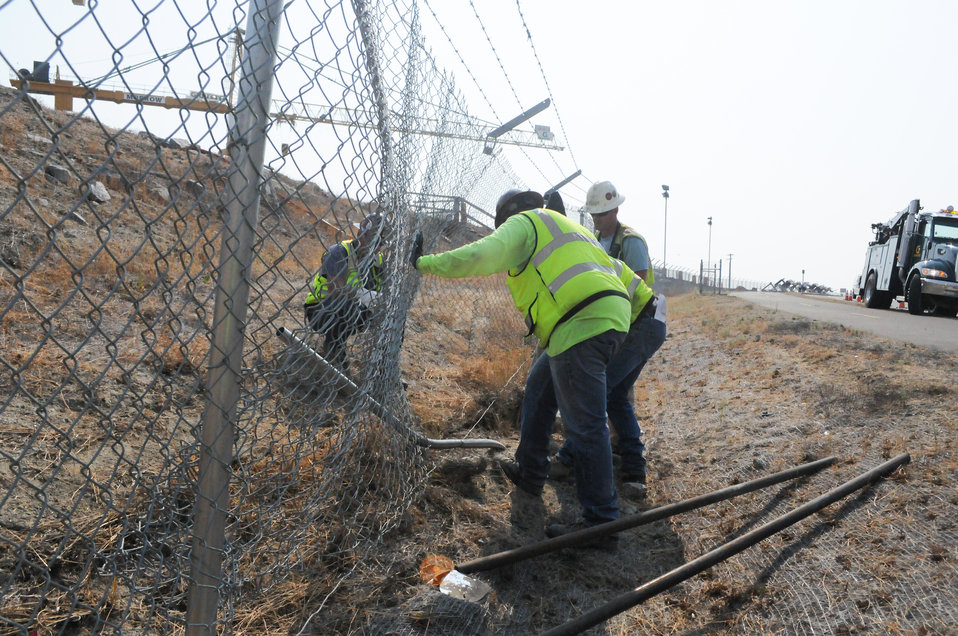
Repairing security fence at construction site

Granite Construction Inc. employees repair a security fence a vehicle crashed through before plunging into the Folsom Dam auxiliary spillway construction site in Folsom, Calif., July 30, 2013. Granite employees were the first to respond to the incident and safely extracted the driver from the vehicle. An electrical cable supplying power to the project was the only damage to the construction site. Work is expected to resume during the evening of July 30.